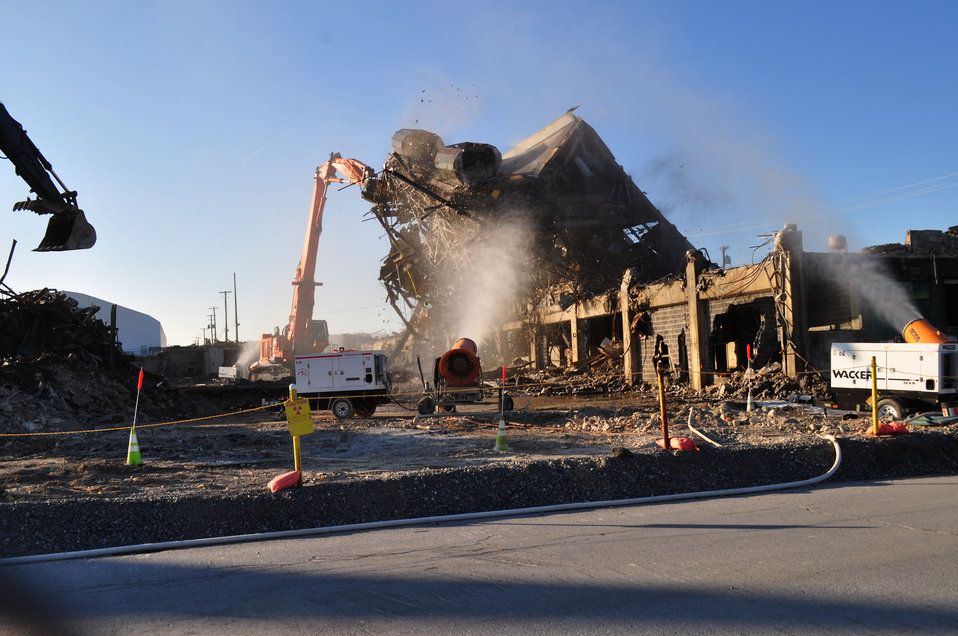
2

K-25 North Tower